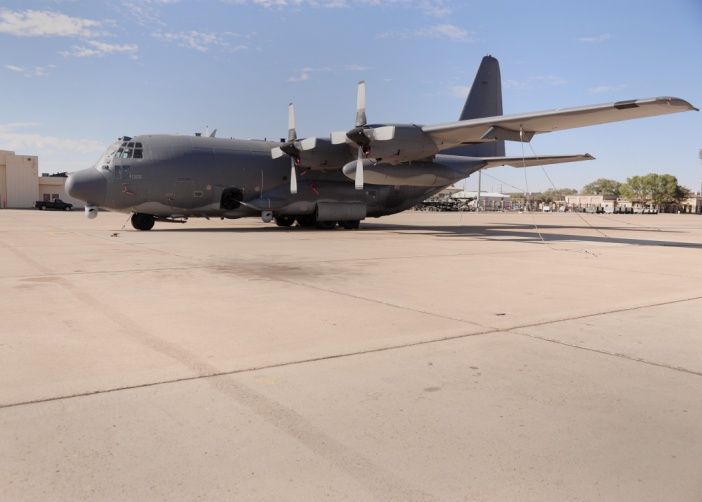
AC-130W Stinger II

The primary mission of the AC-130W Stinger II is armed overwatch. While similar to the AC-130’s missions, Stinger II is primarily focused on performing reconnaissance over friendly positions and may directly deliver ordnance to precise targets to support ground forces.